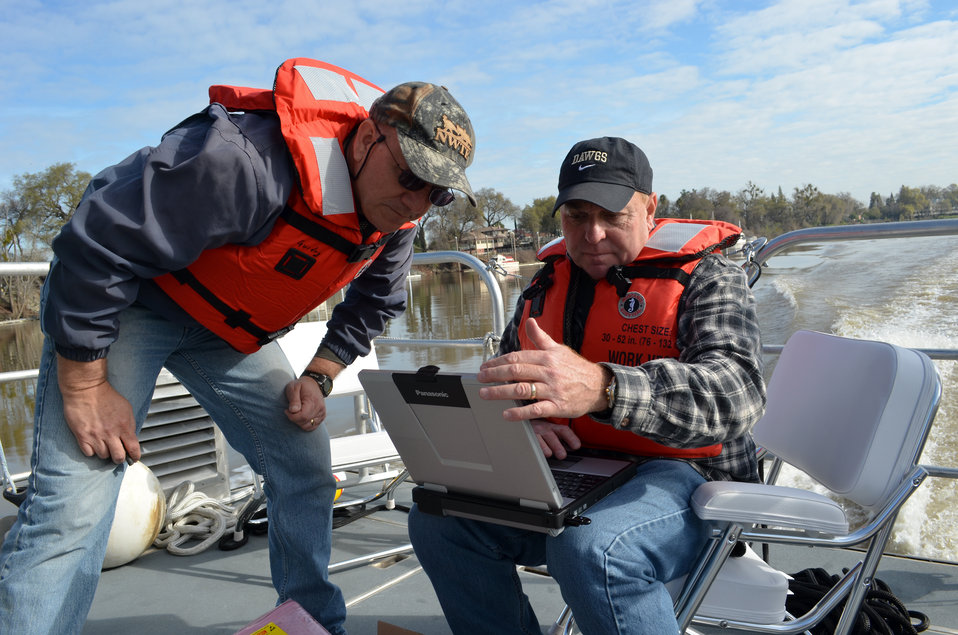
Double checking 2D acoustic data

Senior fish biologist Brian Mulvey (right) and environmental specialist Natalie Houghton with the U.S. Army Corps of Engineers Sacramento District prepare an acoustic receiver for underwater testing in the Sacramento River near Sacramento, Calif., March 21, 2012. The Corps uses the receivers to evaluate habitat restoration work under its Sacramento River Bank Protection Project. A joint effort between the Sacramento District and the California Central Valley Flood Protection Board, the project repairs river bank erosion along the Sacramento River and its tributaries to reduce flood risk. The Corps restores habitat after its repair work and continually monitors fish behavior near the repair sites to ensure the health of the habitat.